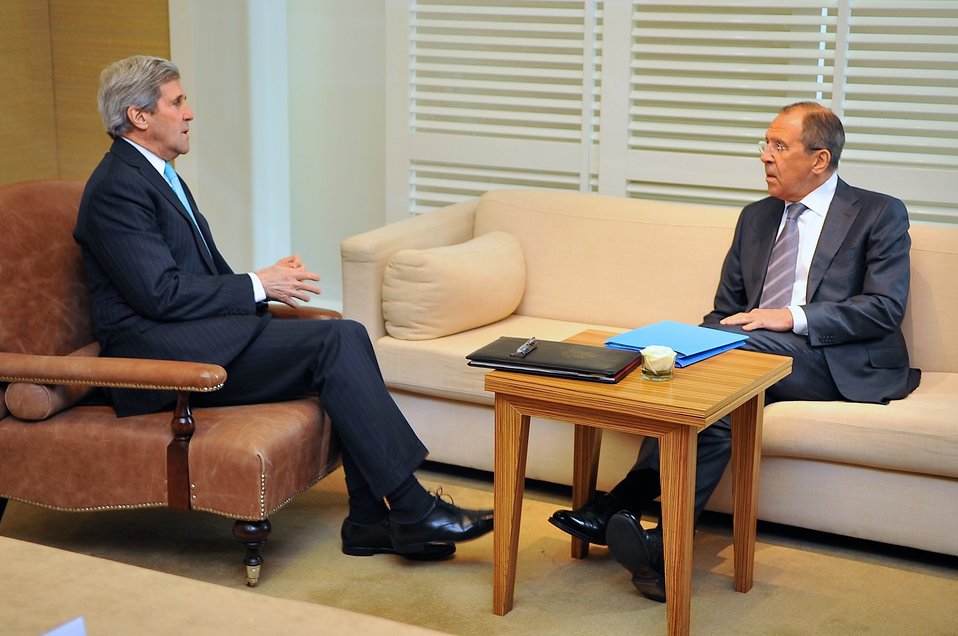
Secretary Kerry Holds One-on-One Discussion With Russian Foreign Minister Lavrov in Geneva About Ukraine

U.S. Secretary of State John Kerry holds a one-on-one discussion with Russian Foreign Minister Sergey Lavrov before the two joined with Ukrainian and European Union officials for four-way talks about Ukraine in Geneva, Switzerland, on April 17, 2014.